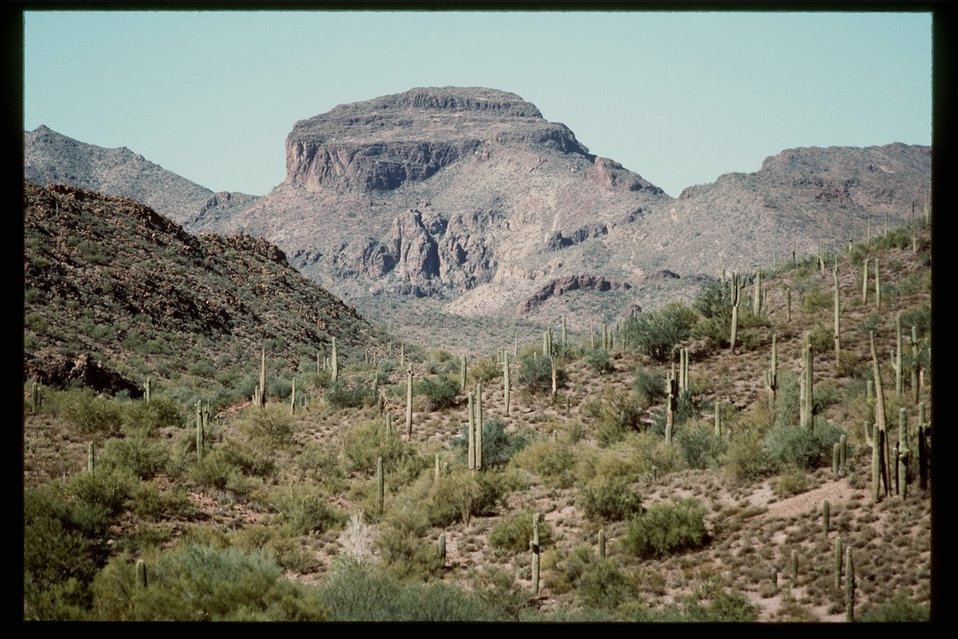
The 100,000-acre Eagletail Mountains Wilderness is about 65 miles west of Phoenix, Arizona in Maricopa, Yuma, and LaPaz counties